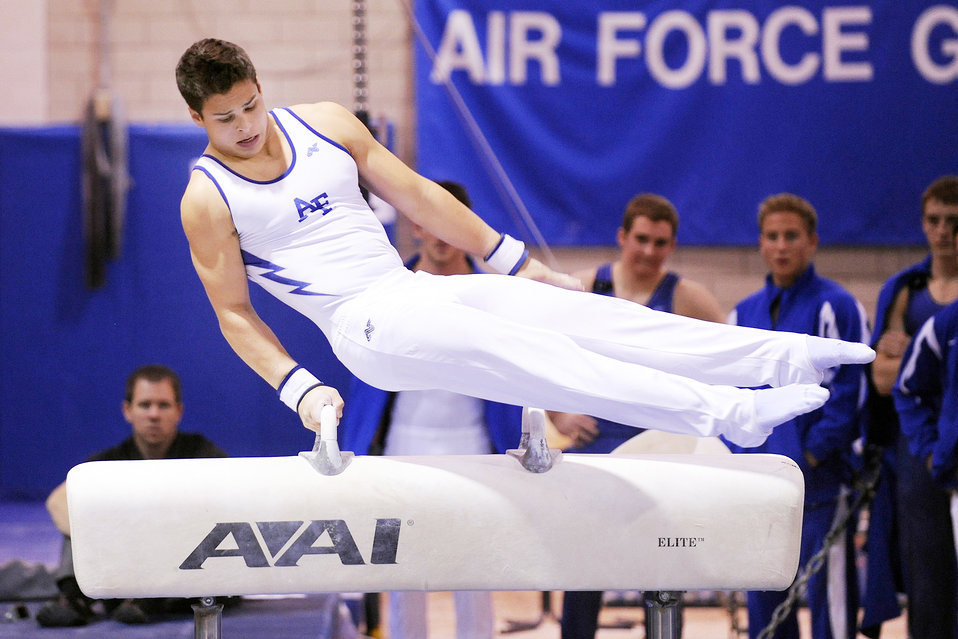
Academy gymnasts compete in Blue-Silver invitational

Falcon Freshman Thom Wilkinson competes on the pommel horse during the second annual Blue-Silver Invitational at the U.S. Air Force Academy's Cadet West Gym Dec. 5, 2009. The Air Force gymnastics